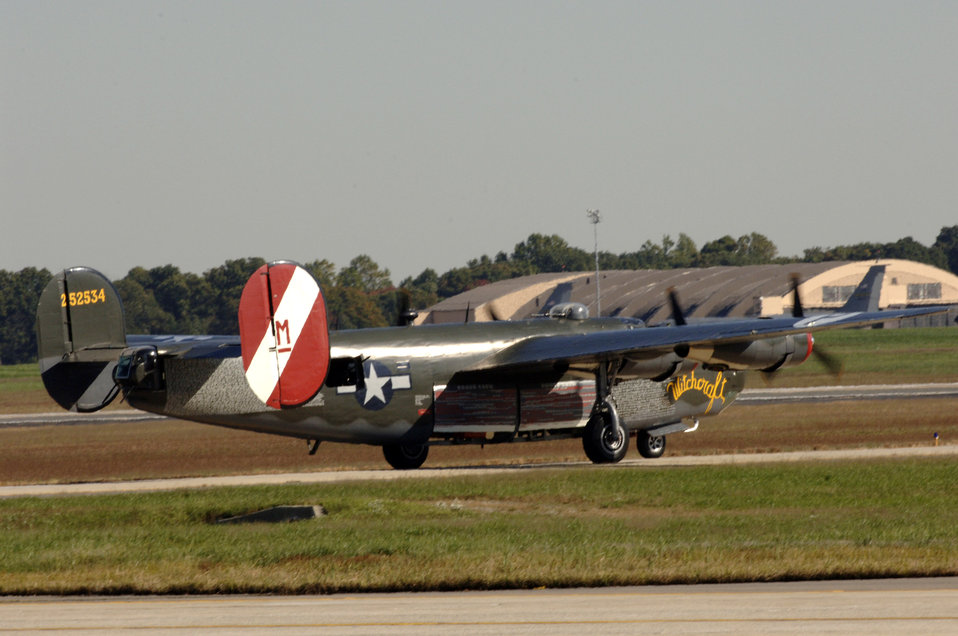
AF Memorial: Warming up for the big show

A B-24 Liberator taxies down the runway during a practice run Oct. 13 at Andrews Air Force Base, Md. Numerous aircraft from the 1930s through modern day will fly over the Air Force Memorial during the official dedication ceremony Oct. 14 in Arlington, Va.